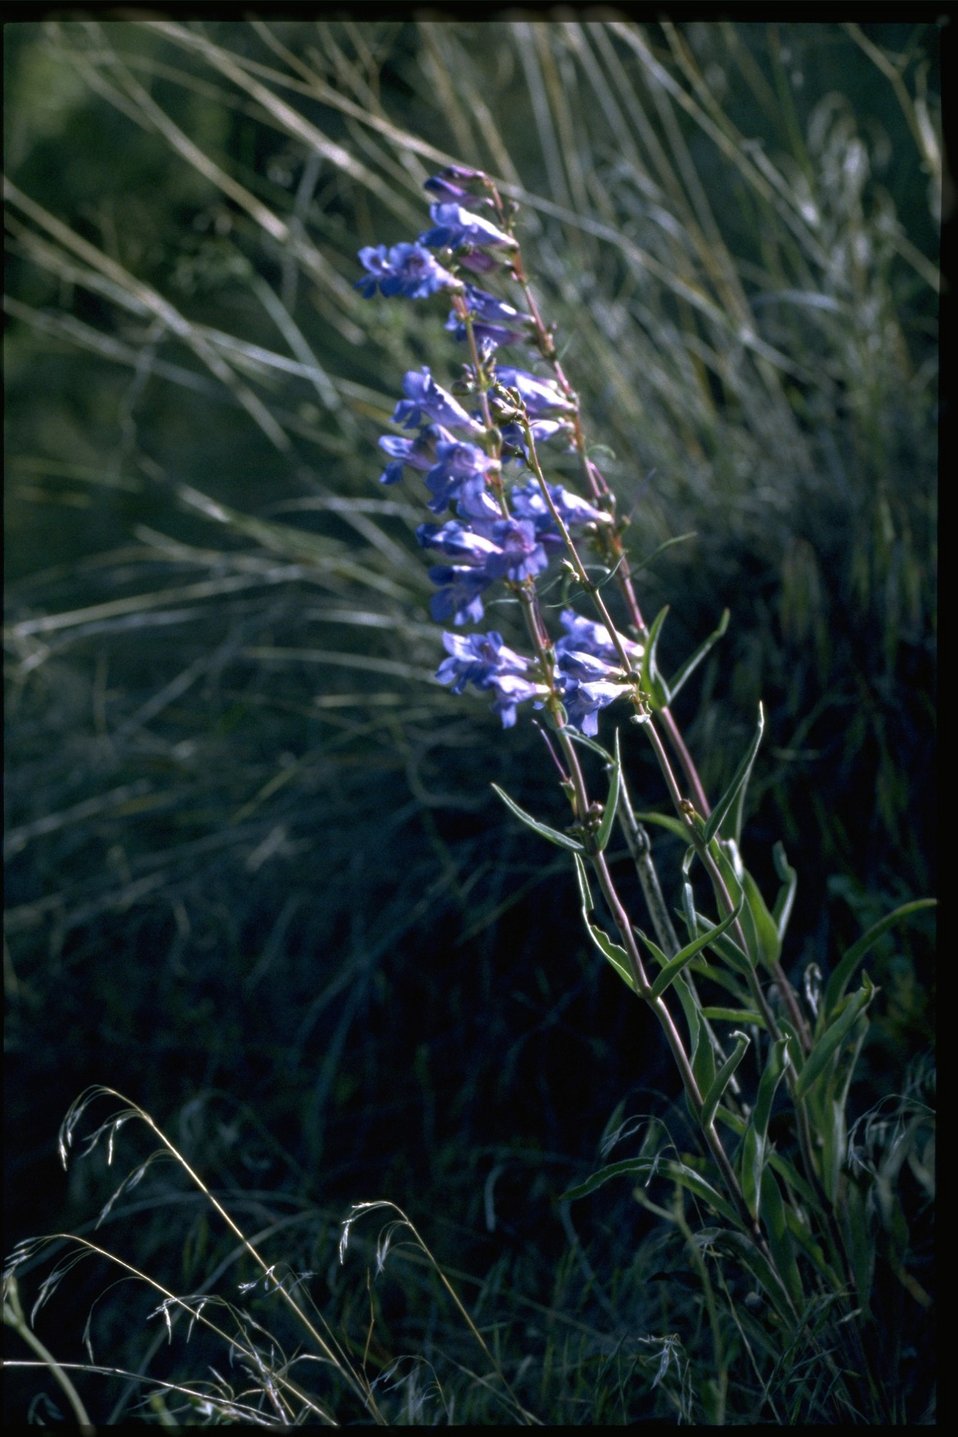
Farshot of Penstemon.